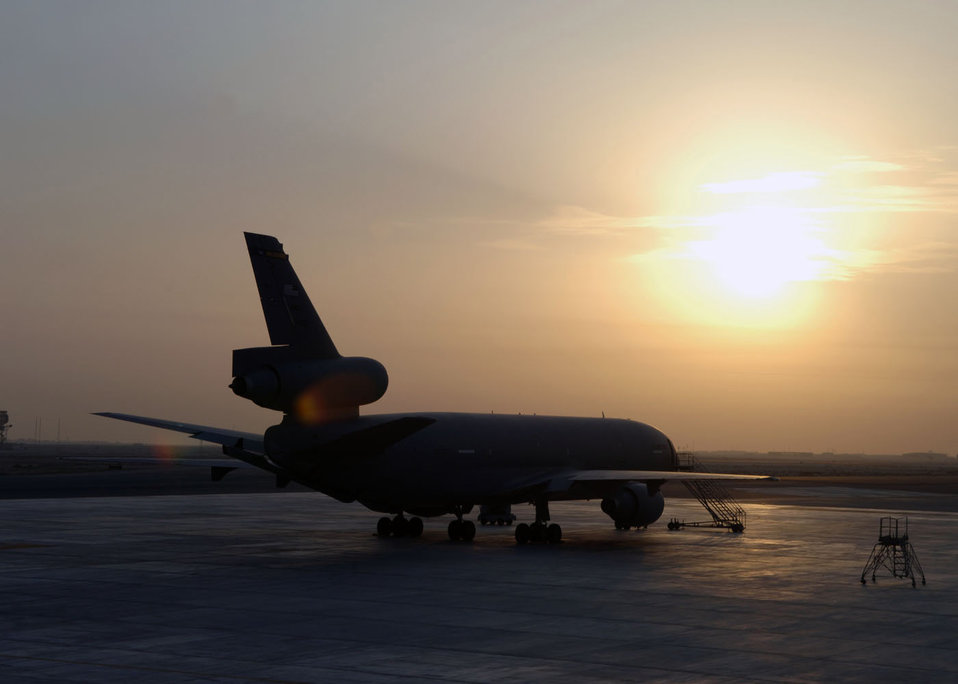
Aug. 31 airpower summary: Tankers bring fuel to fight

An Air Force KC-10 Extender from the 908th Expeditionary Air Refueling Squadron parks after an eight-hour sortie. Coalition KC-10s and KC-135s provided 3.1 million pounds of fuel to 270 aircraft Aug. 30.